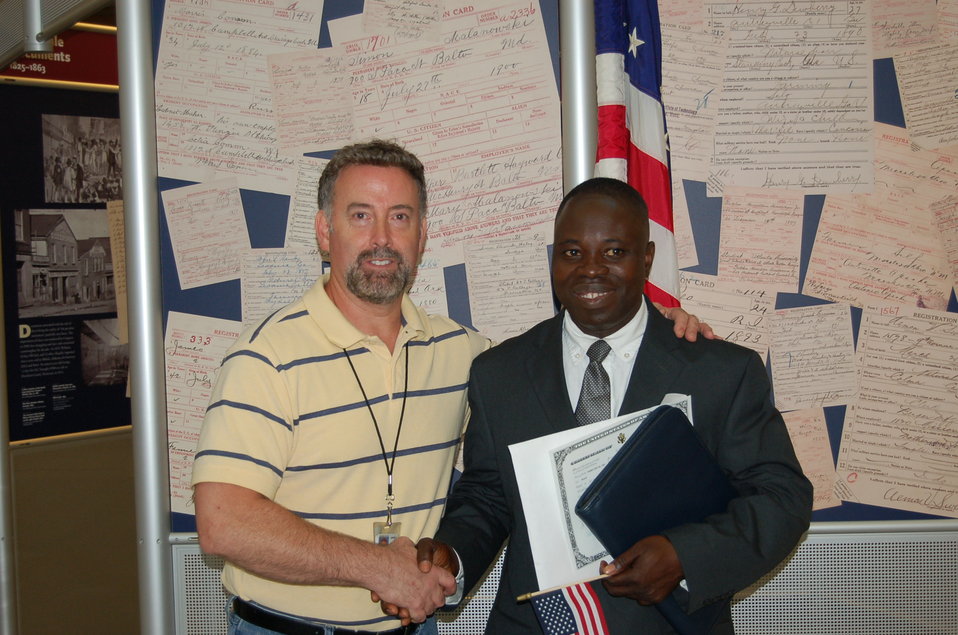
New Citizens